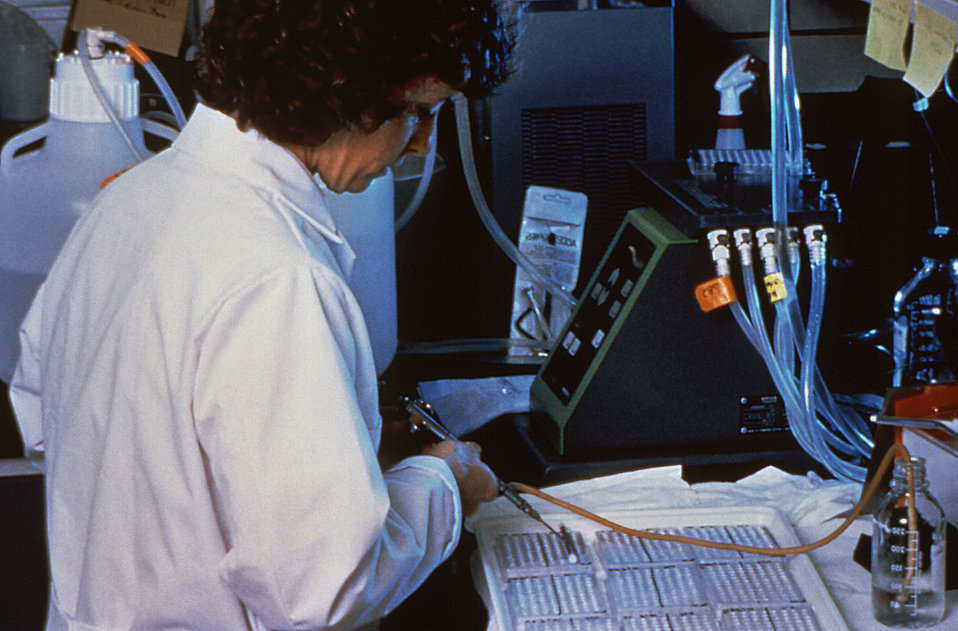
In this 1994 image, a CDC, Special Pathogens Branch scientist is performing an ELISA test on suspected Hantavirus samples.